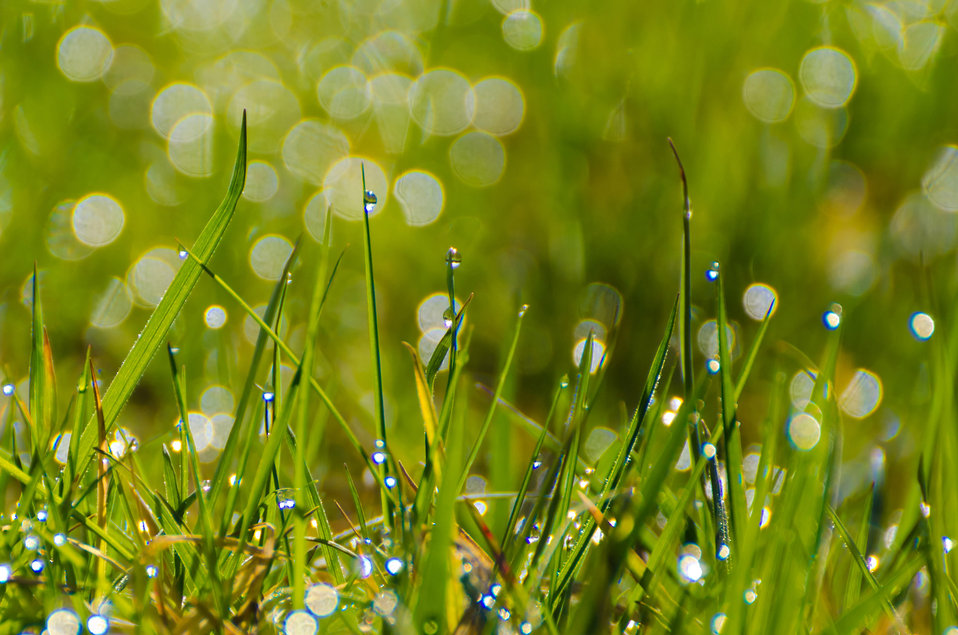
Grass - background.